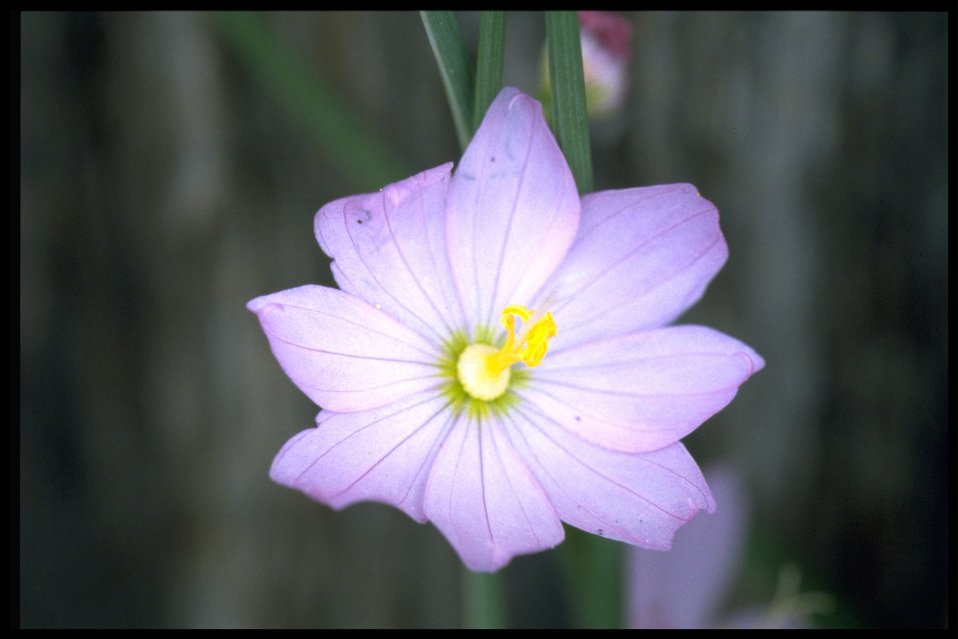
Closeup shot of inflated grasswidow (Olsynium douglasii var. inflatum).